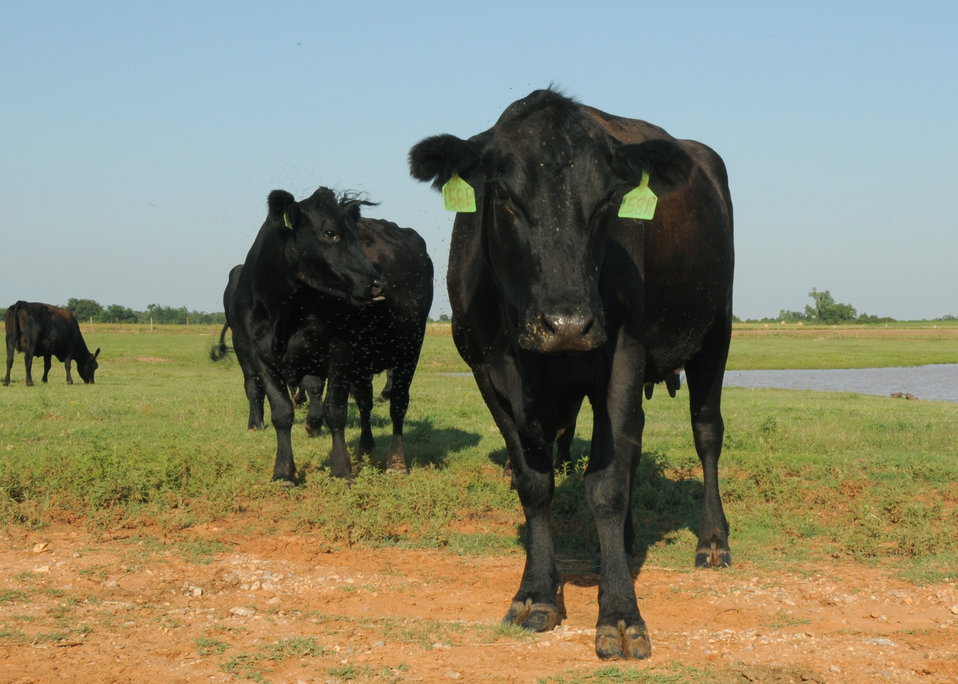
Black Angus cows on the Burris farm in McLoud, OK.